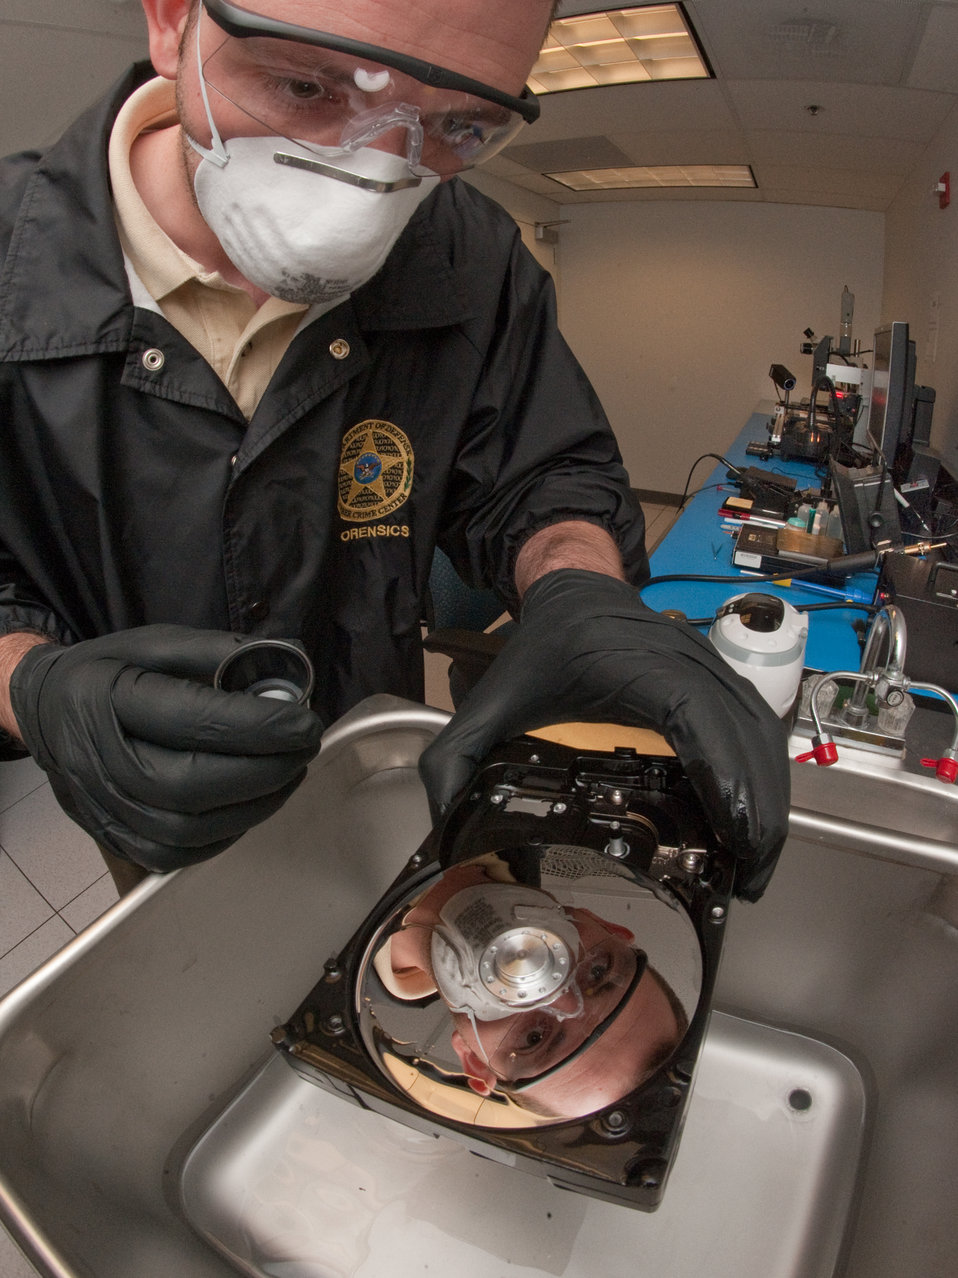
A close look at DoD Cyber Crime Center

Scott Lalliss uses a magnifying lens to check a hard drive that is being cleaned in a sonic cleaner with 91 percent alcohol solution at the Defense Computer Forensic Laboratory Sept. 9, 2010, in Linthicum, Md. The 9 percent of water in the solution develop bubbles that gently move dirt and other organic matter away from the disks that may contain valuable evidence in an investigation. Mr. Lalliss is a senior forensic technician.